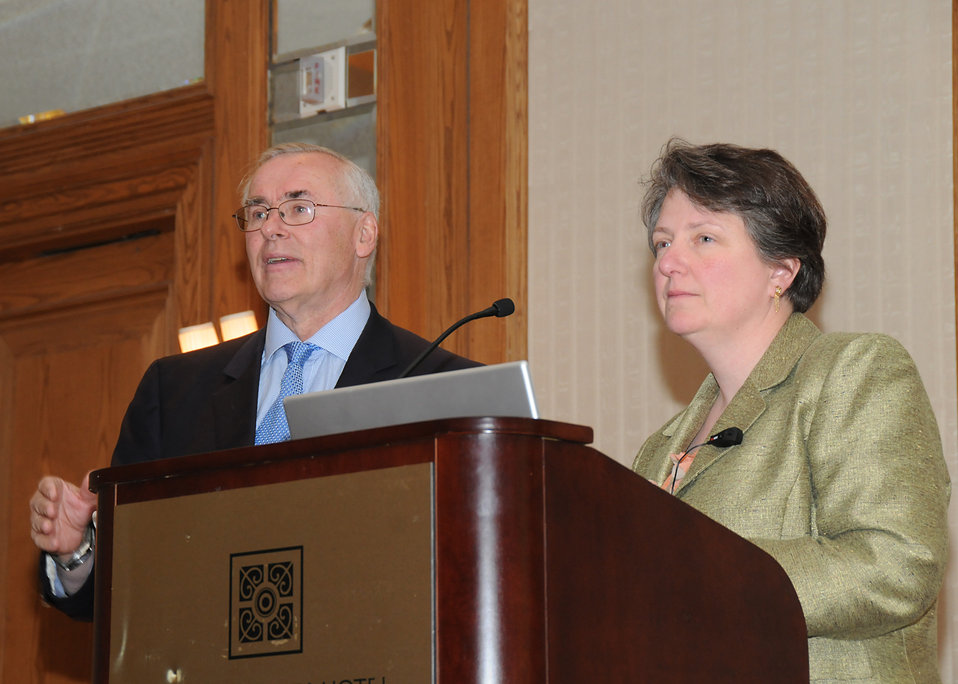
Executive Chairman Wholesome Wave Foundation August Schumacher moderates questions from Foundation partners for Agriculture Deputy Secretary Kathleen Merrigan. The Wholesome Wave Foundation partner’s meeting was held at the L’ Enfant Plaza Hotel in Washington, D. C., on Monday, May 10, 2010. USDA photo 10di1350-29